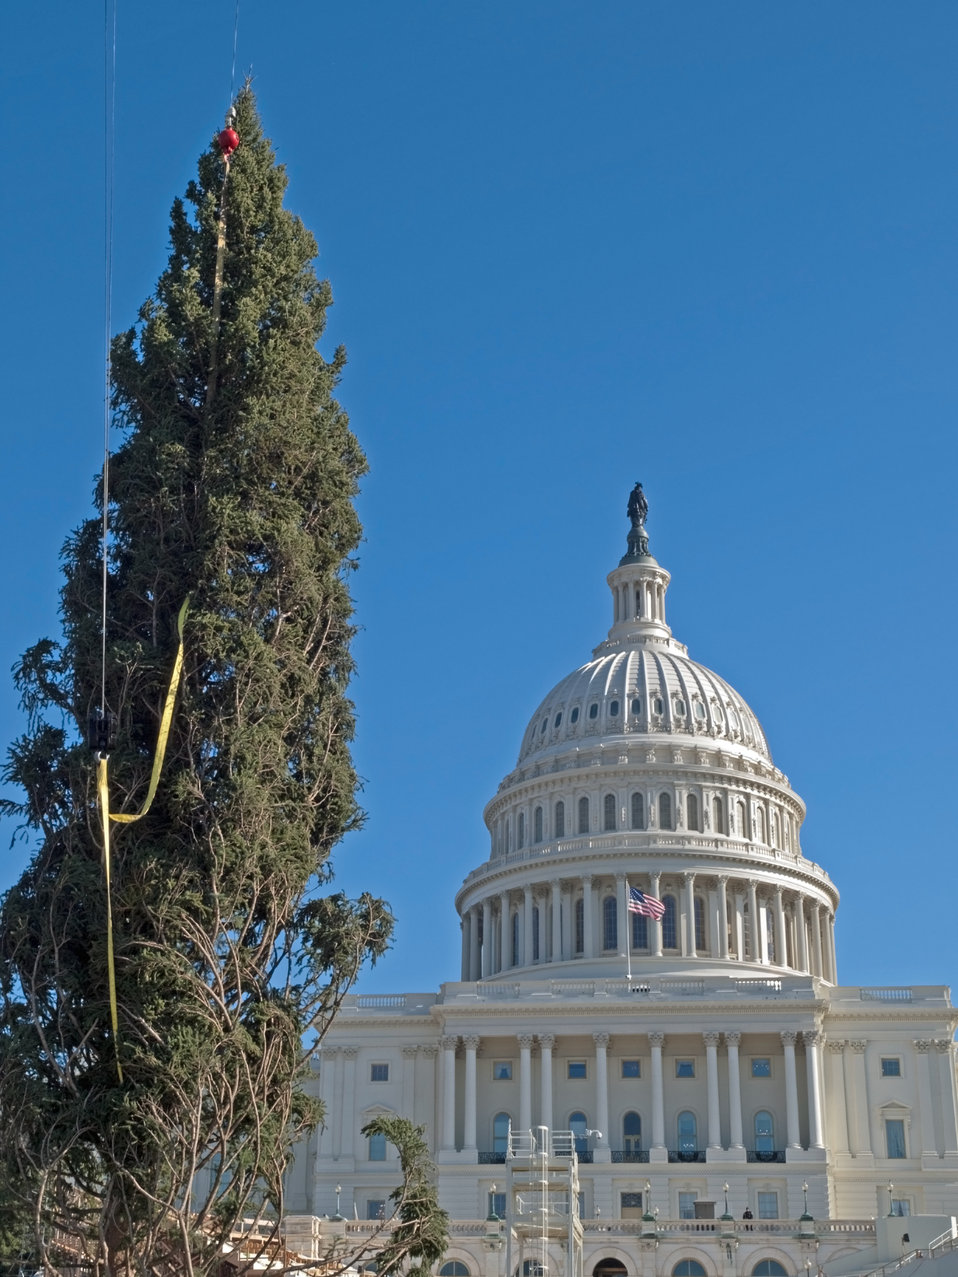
Members of the Capitol grounds crew place the 2012 Capitol Christmas Tree on the west lawn of the Capitol in Washington, D.C. on Nov.26, 2012. The 73-foot Englemann spruce traveled from the White River National Forest in Colorado.